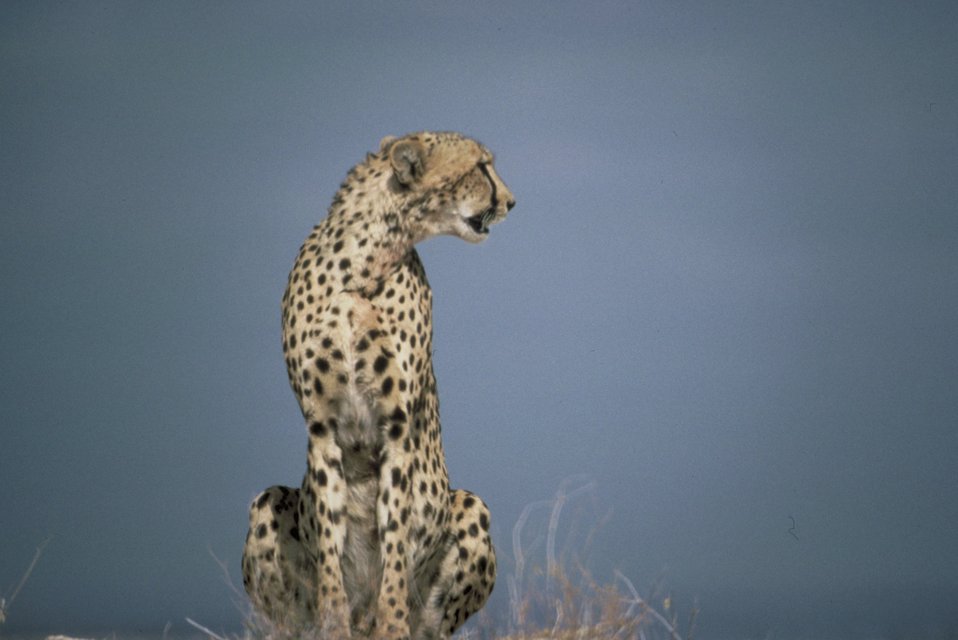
A cheetah sitting.